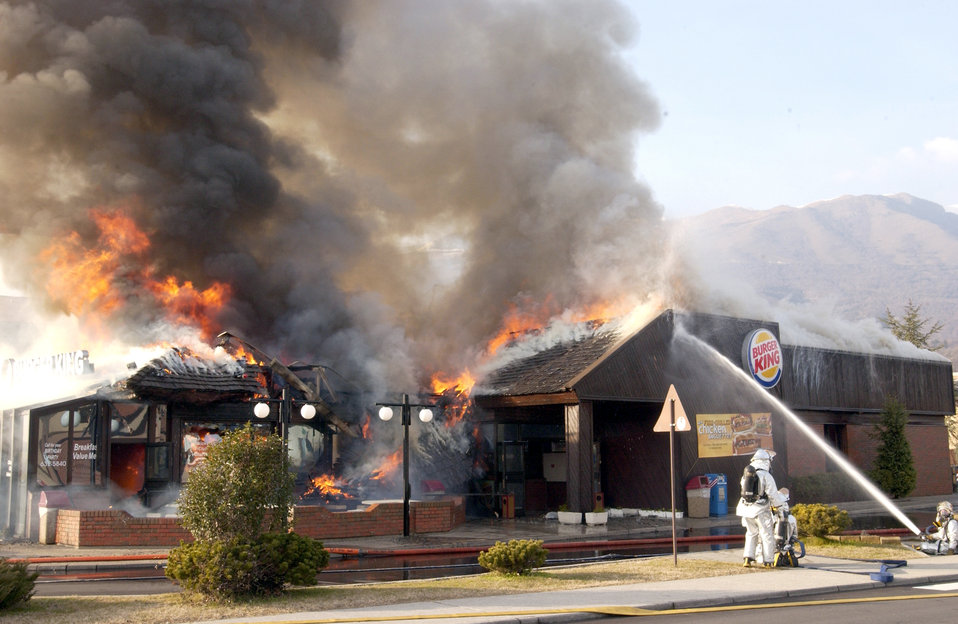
Aviano fire destroys building

AVIANO AIR BASE, Italy -- Air Force firefighters battle a blaze at the base's Burger King here Jan. 12. The fire was reported at about 1:30 p.m. after flames and smoke were seen on the roof of the building. The facility was destroyed.